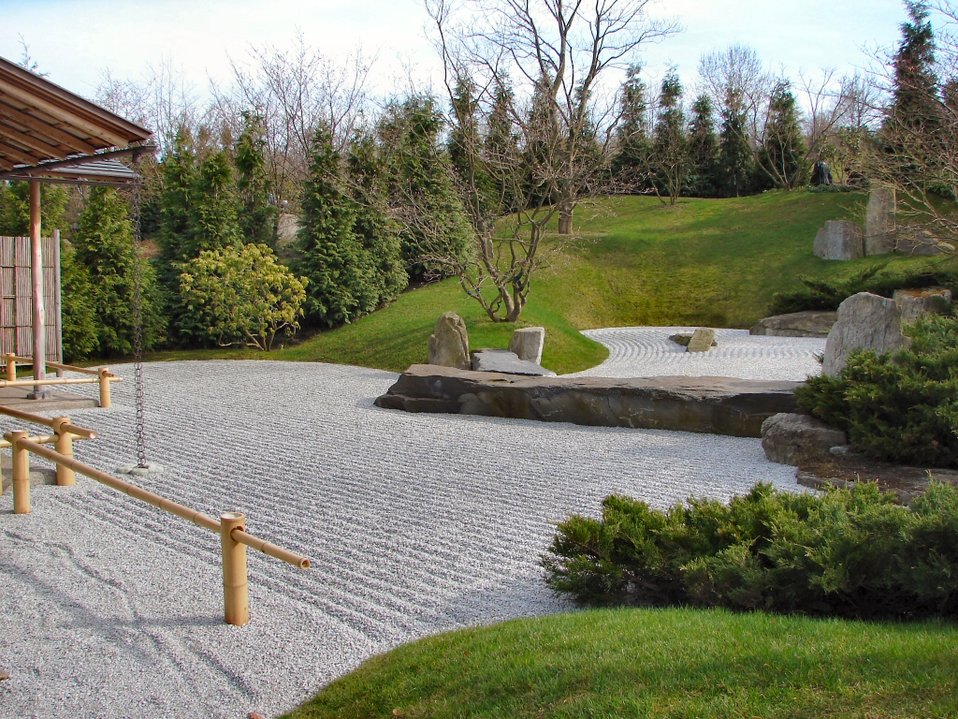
japanese garden in Erholungspark Marzahn Deutsch: Japanischer Garten im Erholungspark Marzahn